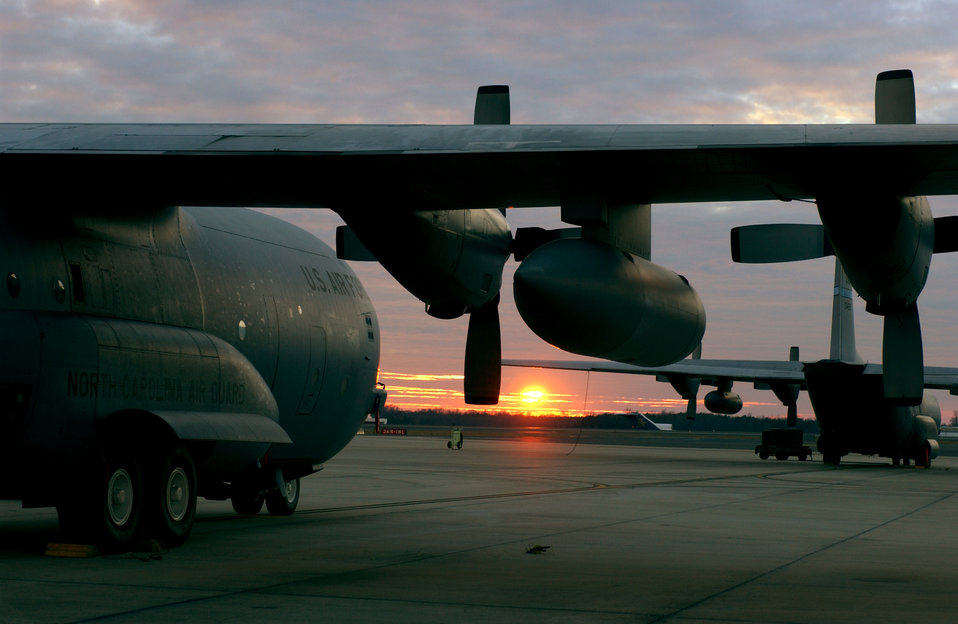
Defending freedom

C-130 Hercules aircraft sit on the flightline during the sunset Feb. 6 at Charlotte, N.C. Several 145th Airlift Wing North Carolina Air Guard aircraft and Airmen are deploying to support Operation Enduring Freedom. The C-130 can accommodate a wide variety of oversized cargo, including everything from utility helicopters and six-wheeled armored vehicles to standard palletized cargo and passengers.